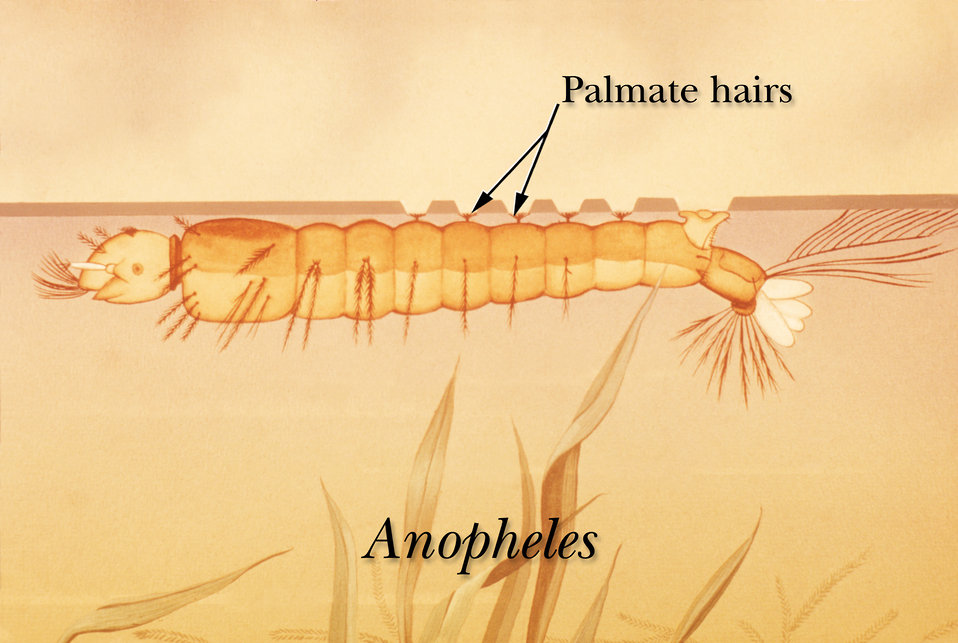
Drawing of the lateral view of an Anopheles mosquito larva showing palmate hairs at the water's surface.